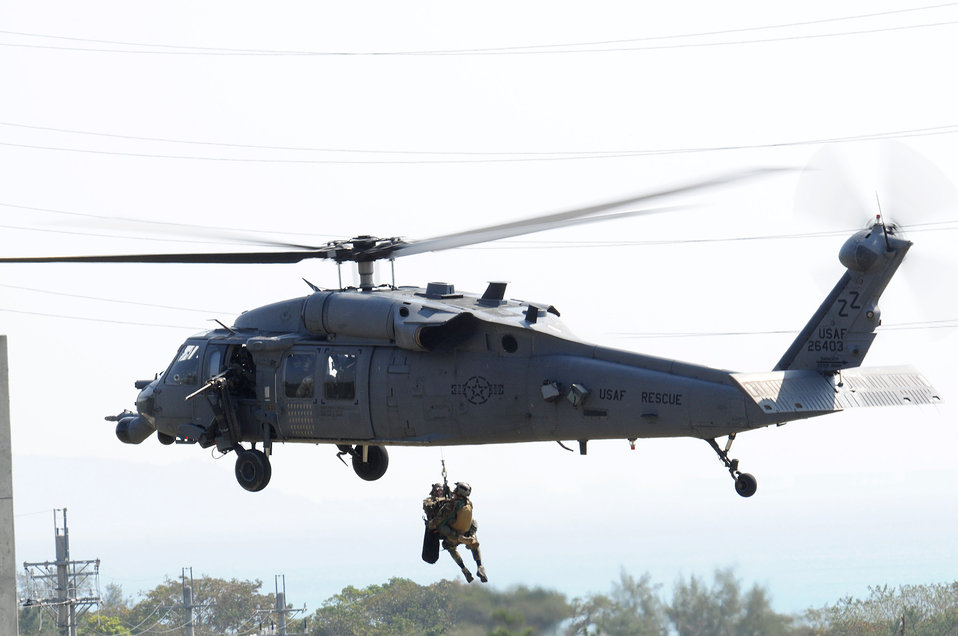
33rd Rescue Squadron wins 2009 Air Force's Verne Orr Award

Pararescuemen assigned to 31st Rescue Squadron at Kadena Air Base, Japan, are hoisted into an HH-60G Pave Hawk helicopter during exercise Cope Angel 09-1 in Japan.